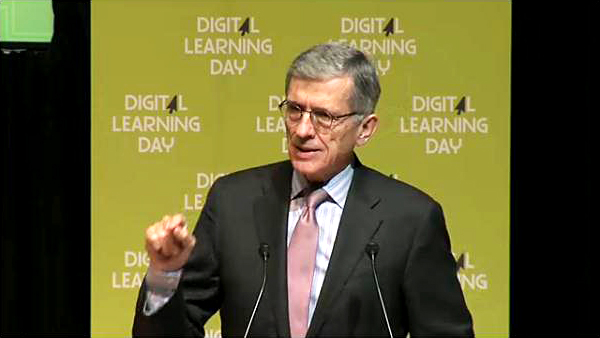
2.5.14 Digital Learning Day

FCC Chairman Wheeler delivering remarks at Digital Learning Day held on 2/5/2014 at the Library of Congress.